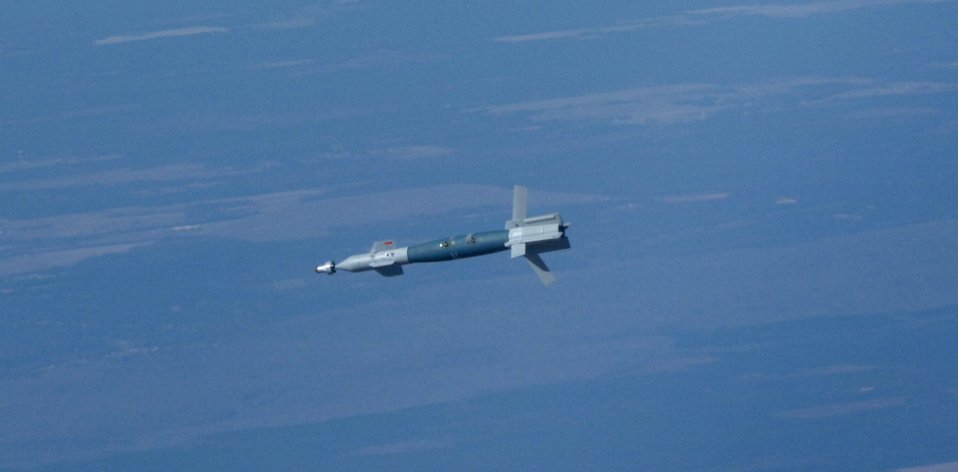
Northwest Florida site of weapons system evaluation

A laser-guided-bomb flies over the Bravo-70 range Dec. 5 at Eglin Air Force Base, Fla. The bomb was dropped by a CF-18 Hornet from the Canadian 409th Tactical Fighter Squadron. The Canadians were taking part in the 86th Fighter Weapons Squadron's Weapons Systems Evaluation Program.